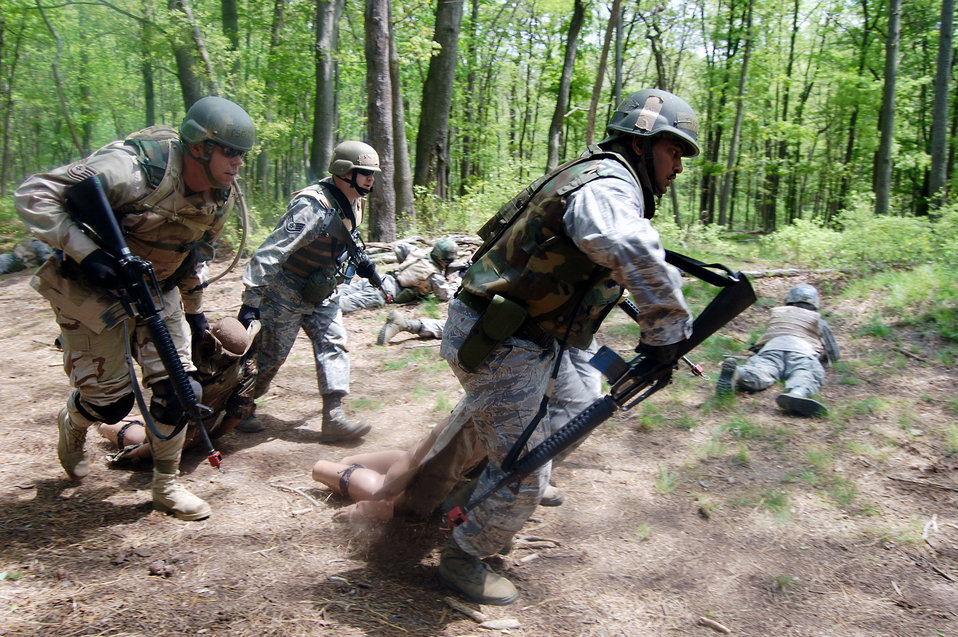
Injured Airman credits training for saving her life

Students in the Advanced Contingency Skills Training Course move simulated victims during training May 11, 2009, at Joint Base McGuire-Dix-Lakehurst, N.J. The training prepares Airmen for upcoming deployments.